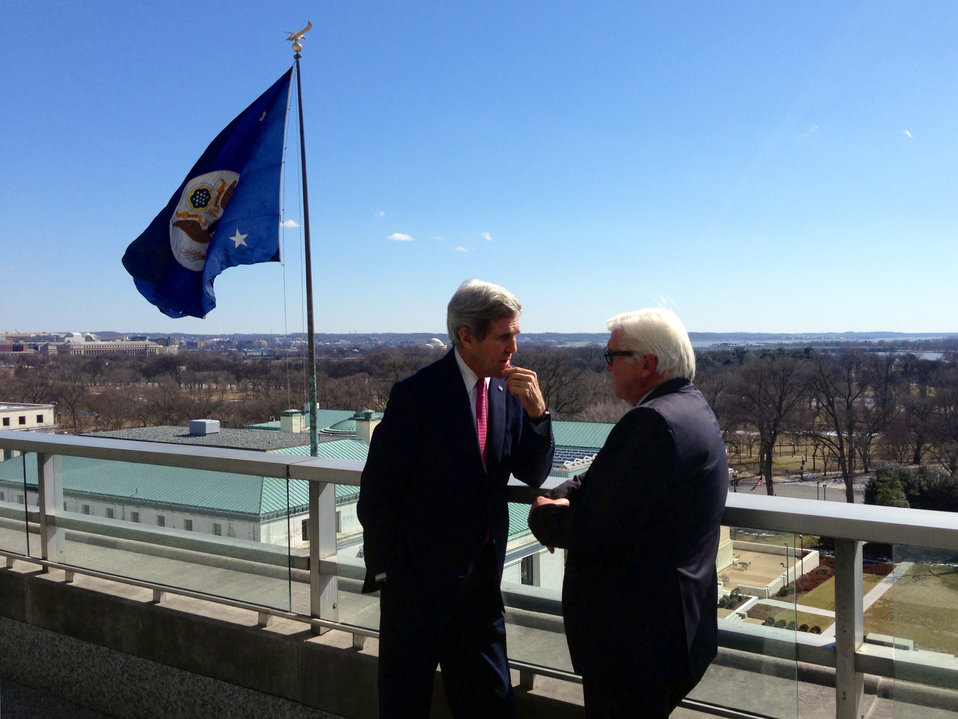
Secretary Kerry and German Foreign Minister Steinmeier Speak on the Terrace

U.S. Secretary of State John Kerry Kerry and German Foreign Minister Frank-Walter Steinmeier speak on the terrace of the U.S. Department of State in Washington, D.C., on February 27, 2014.